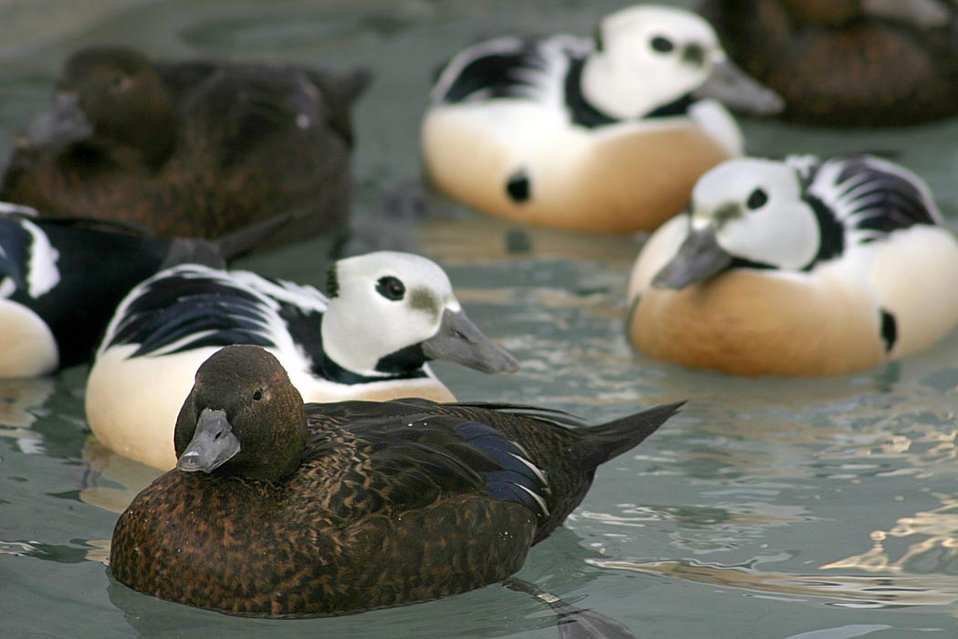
Threatened Steller's eider (Polysticta stelleri) males and females, Alaska SeaLife Center, Seward, Alaska